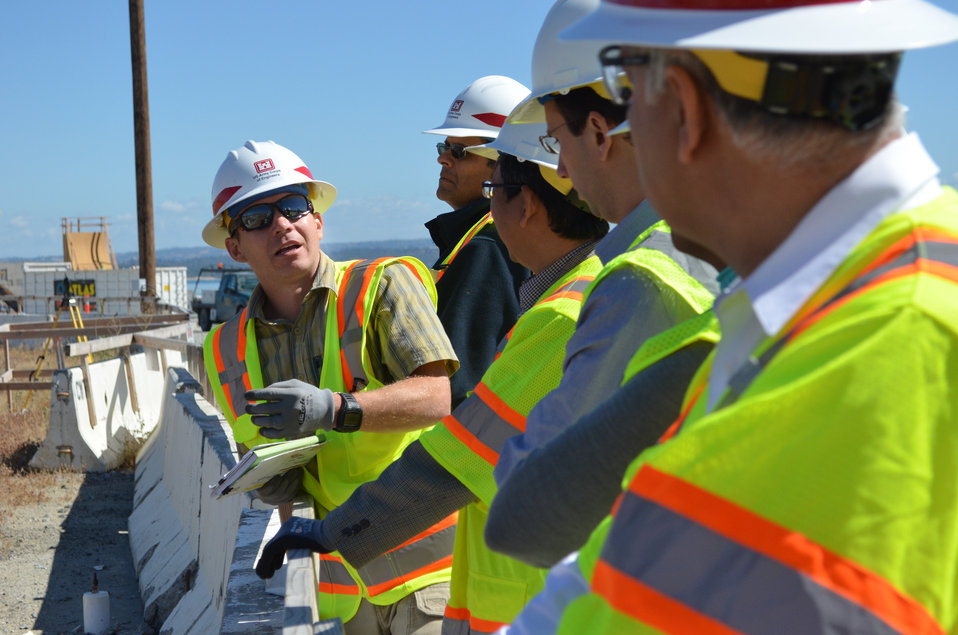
Brian Szydlik leads World Bank tour of Folsom Dam auxiliary spillway project

Brian Szydlik (left), chief of contract administration for the U.S. Army Corps of Engineers Sacramento District's Folsom Dam auxiliary spillway project, leads a group of representatives from the World Bank on a tour of the spillway's construction site June 19, 2013, in Folsom, Calif. The bank is interested in learning about the latest technology in urban flood control so they can make informed decisions when funding projects.